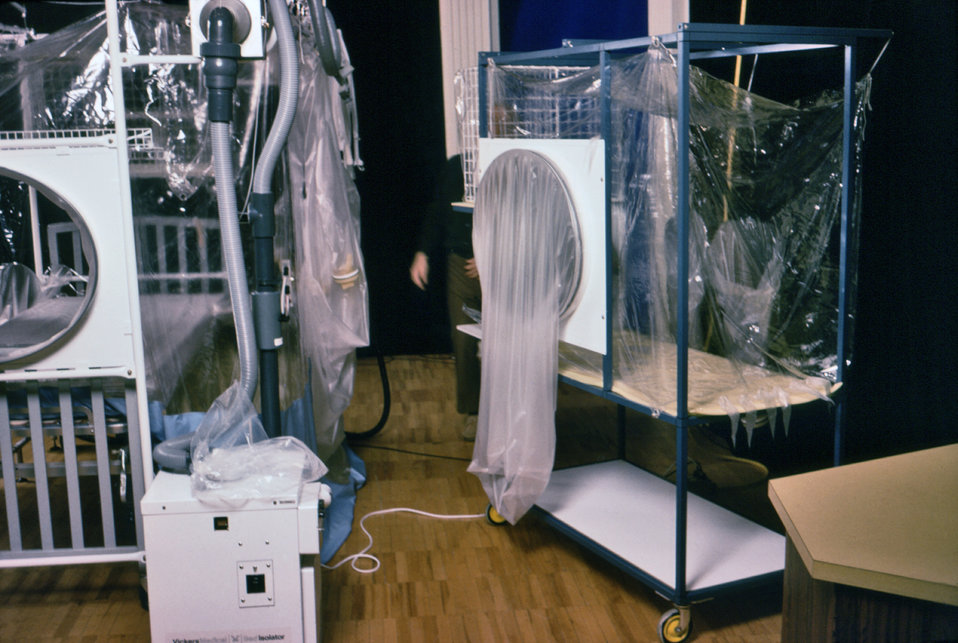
These two Bed Isolators, produced by Vickers Medical, Ltd., were on display in 1977 at the CDC.